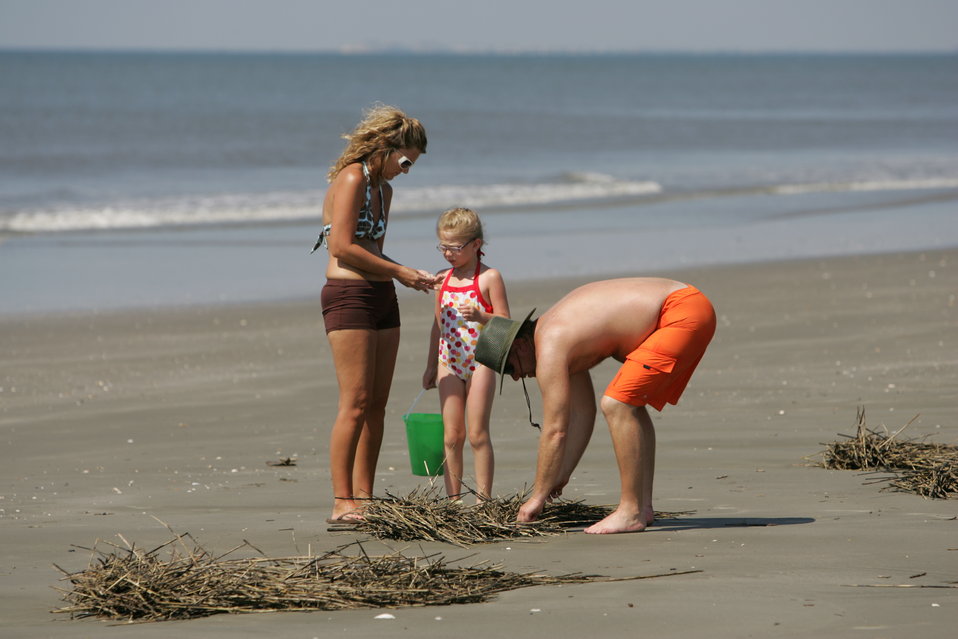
A family on the beach

A family at the beach on the refuge.